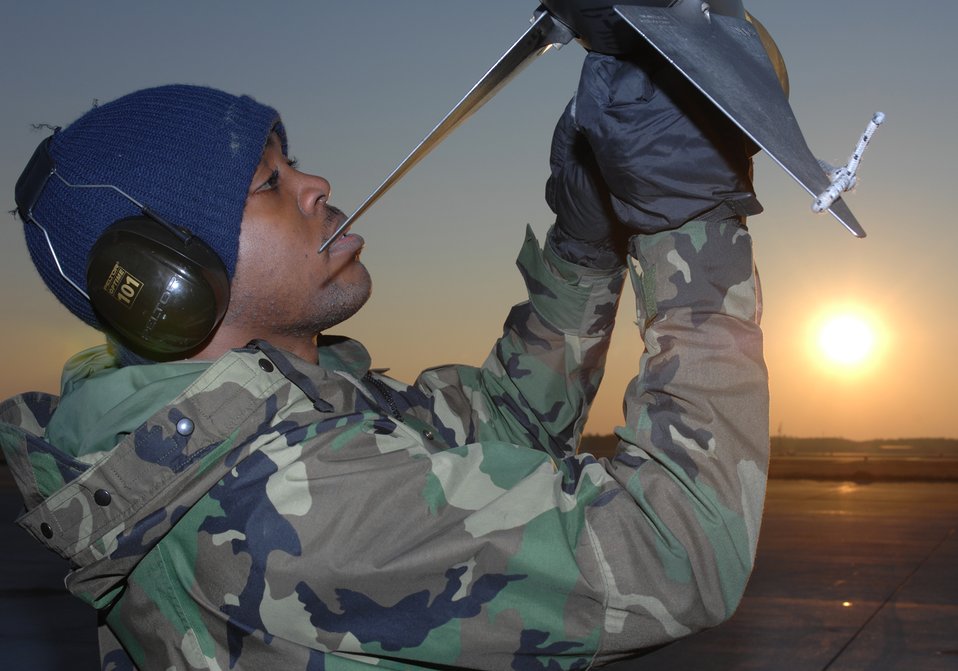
Iron Thunder roars through Shaw

Airman 1st Class Wilbert Dixon replaces the cooling componet on an AIM-9 missle in support of Exercise Iron Thunder Feb. 7 at Shaw Air Force Base, S.C. The objective of the exercise is to prepare units for future contingency operations by offering a chance for players to be exposed to missions identical to those faced in combat. Airman Dixon is a 77th Fighter Squadron weapons specialist.